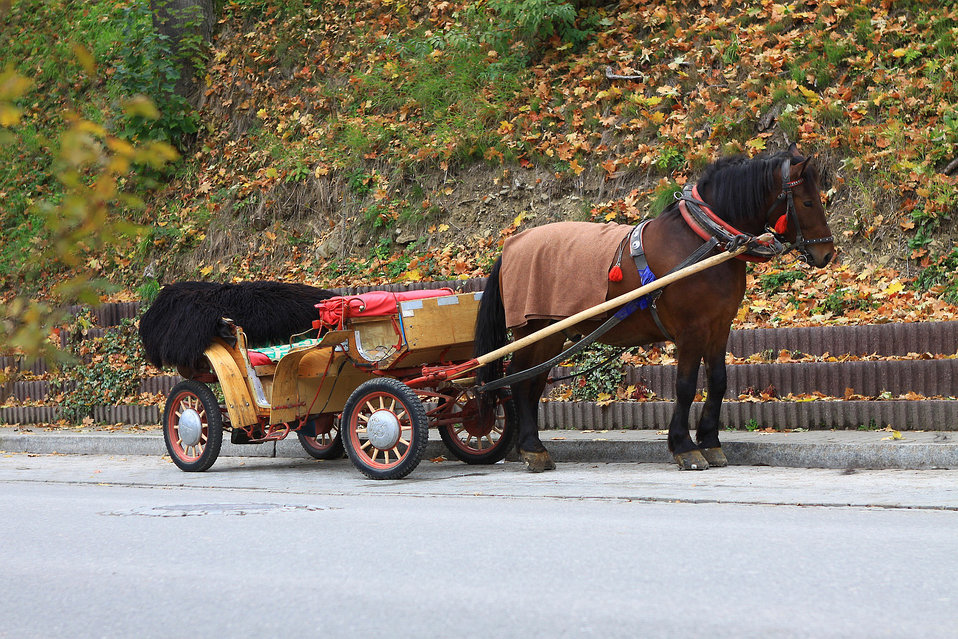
Transportation

Local transportation in small mountain town.